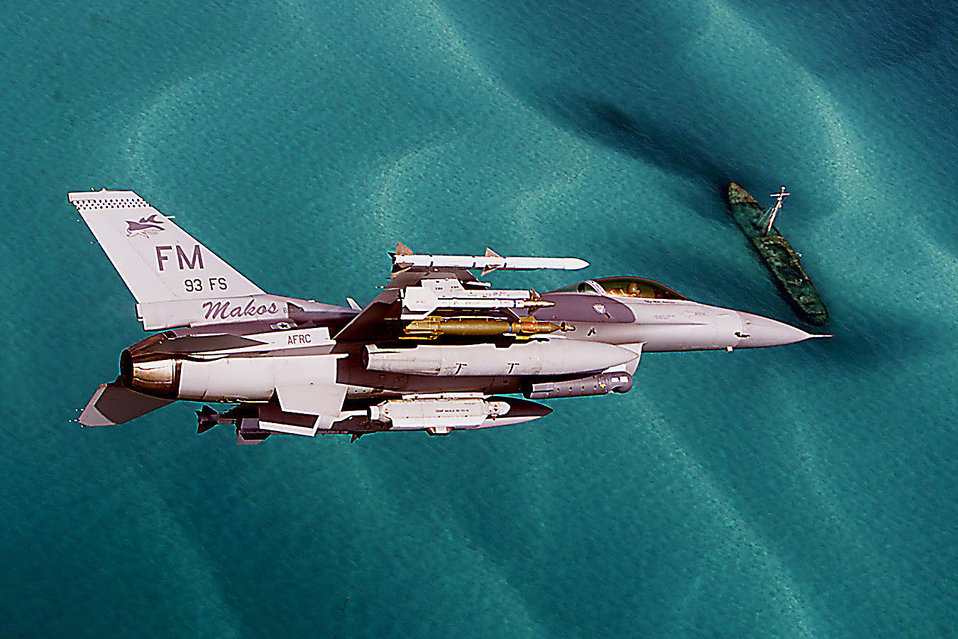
Coastin'

FILE PHOTO -- A 482nd Fighter Wing F-16C Fighting Falcon near the southern Florida coastline over Homestead Air Reserve Base. The aircraft carries AIM-120 and AIM-9 air-to-air missiles, a single GBU-12, ALQ-131 jamming pod and a lighting targeting pod.